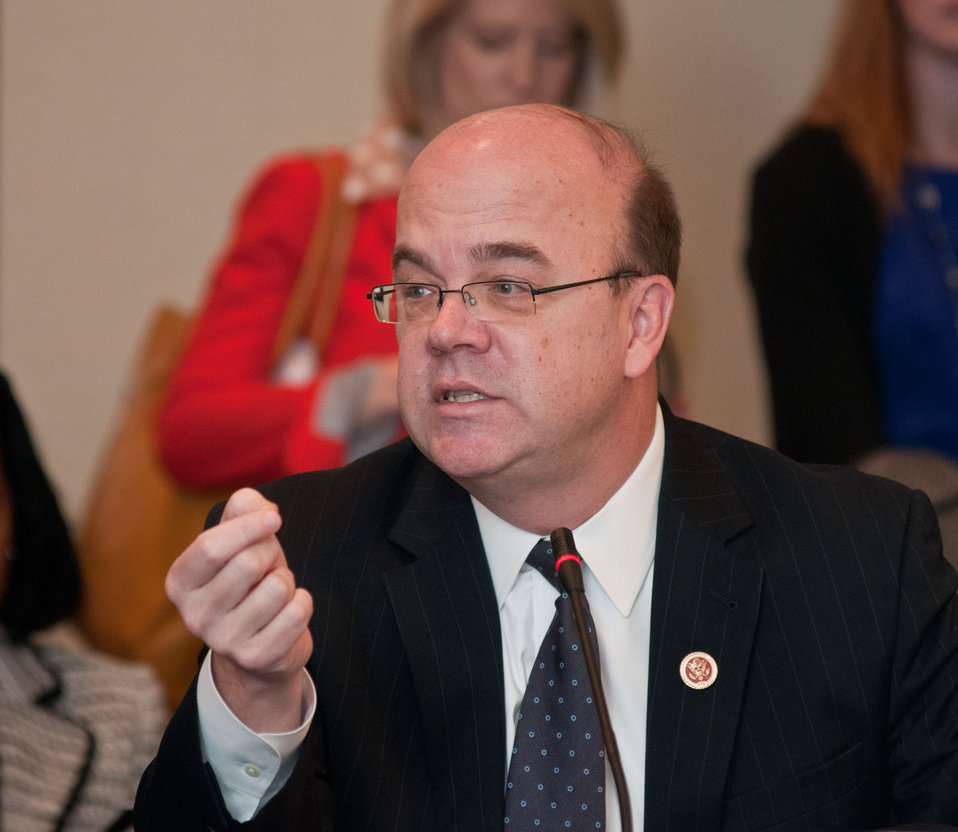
U.S. Representative Jim McGovern addresses the Food Policy session of the United States Conference of Mayors 81st Winter Meeting, in Washington D.C., on Thursday, Jan 17, 2013. He talks about pursuing multiple solutions to food issues in American cities and addressing the political aspect of ending hunger in cities.